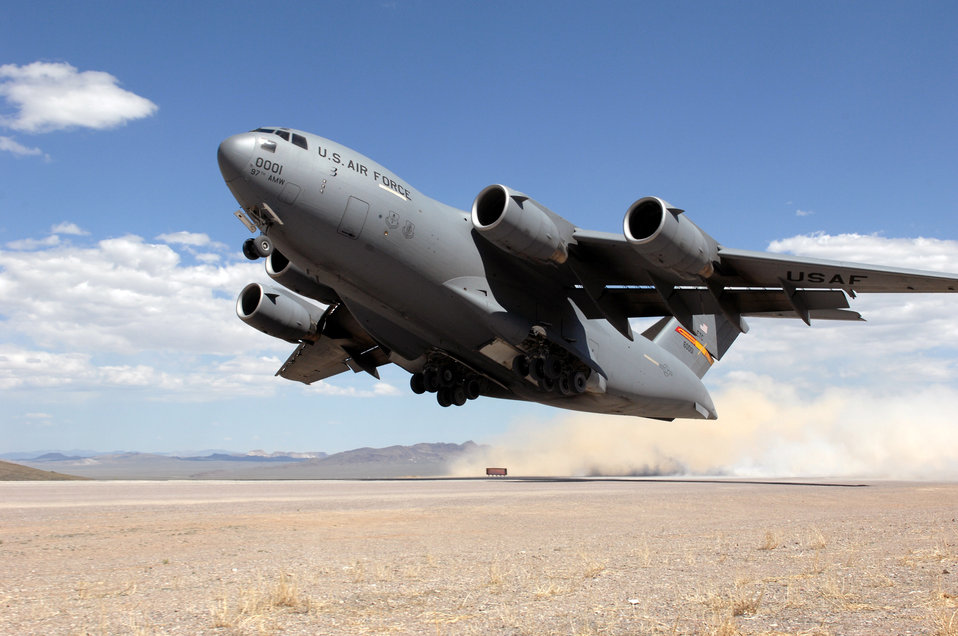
Testing mobility forces

A C-17 Globemaster III assigned to the 97th Air Mobility Wing at Altus Air Force Base, Okla., takes off from the Tonopah runway May 20 near Nellis AFB, Nev., while participating in the Mobility Air Forces Exercise. Approximately 12 U.S. Air Force bases participate in the exercise twice a year, testing the crew ability of C-17 Globemaster IIIs and C-130s to join together in formation at a specific time and location to drop a brigade-size force anywhere in the world.